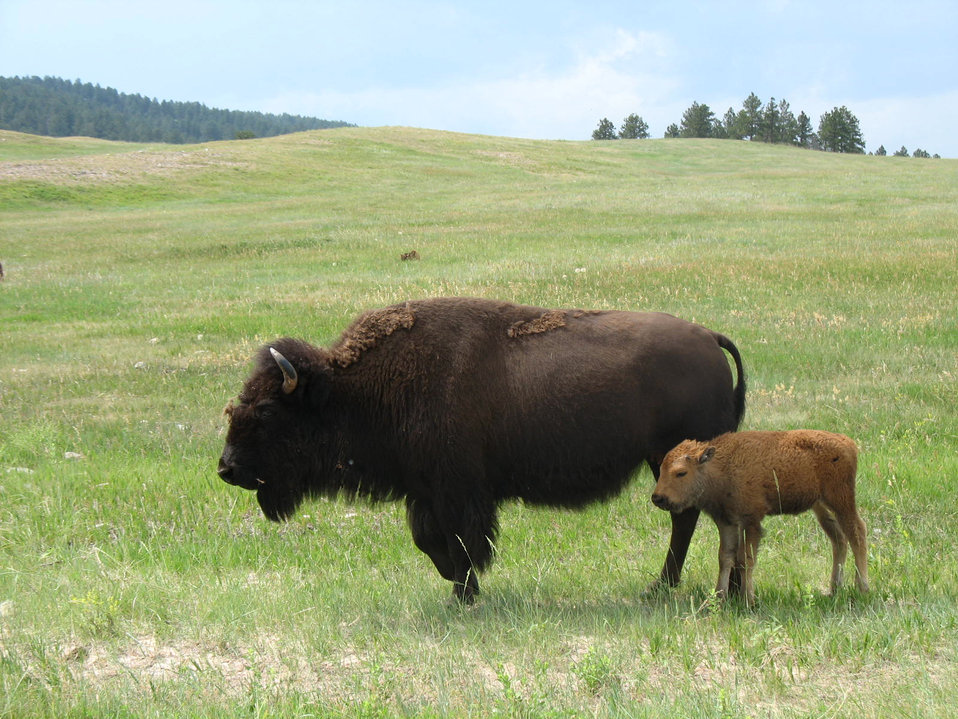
Bison and calf, Wind Cave National Park, South Dakota.

Credit: Pedro 'Pete' Ramirez, Jr. / USFWS